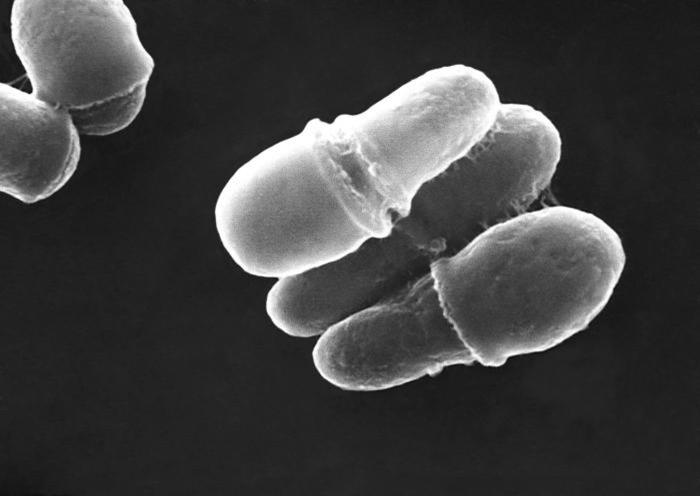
Scanning electron micrograph (SEM) of Malassezia lipophilis fungal organisms.